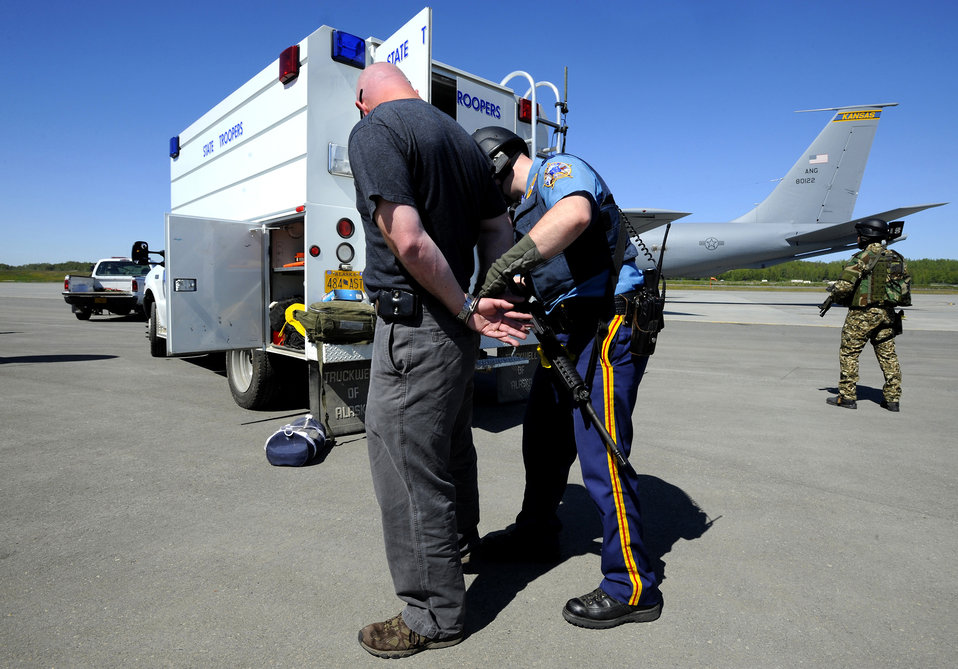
Arctic Fencing Interagency Arrow 2010

An Alaska State Trooper processes a simulated, suspected terrorist during Arctic Fencing Interagency Arrow 2010 field training exercise May 26, 2010, at Elmendorf Air Force Base, Alaska.